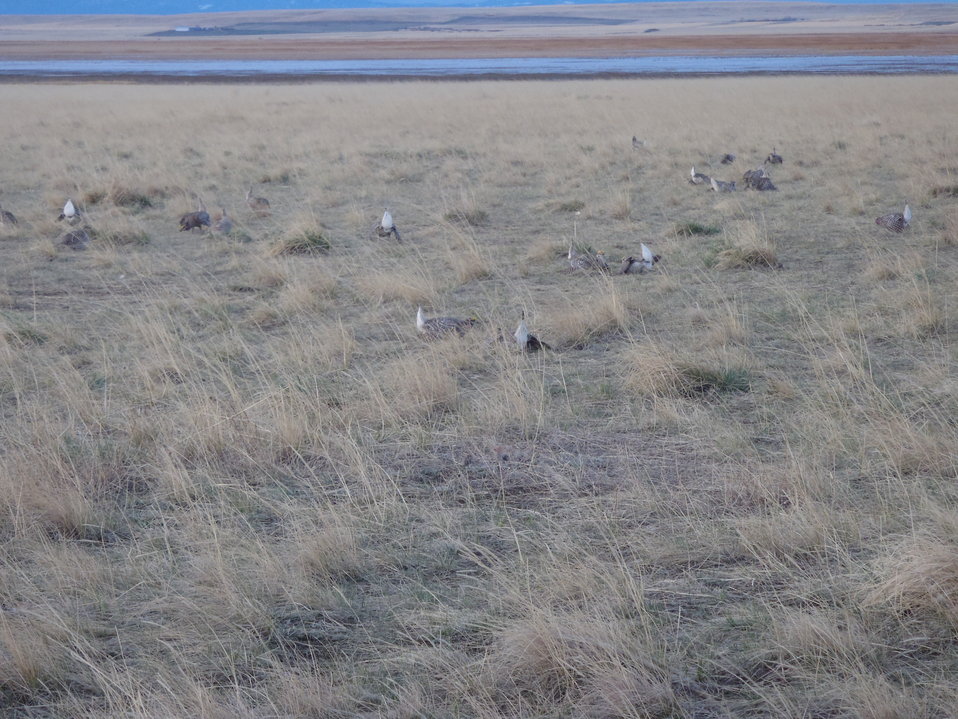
Sharp-tailed Grouse

The mating routine of sharp-tailed grouse involves males displaying communally at a traditional site (one used year after year). This site is known as a “lek.” Males compete for mates by performing a ritualized dance in conjunction with calling (often a booming sound) and inflating purplish air sacs along their necks. Females approach the edge of the lek, observe and eventually select a dance participant to mate with.